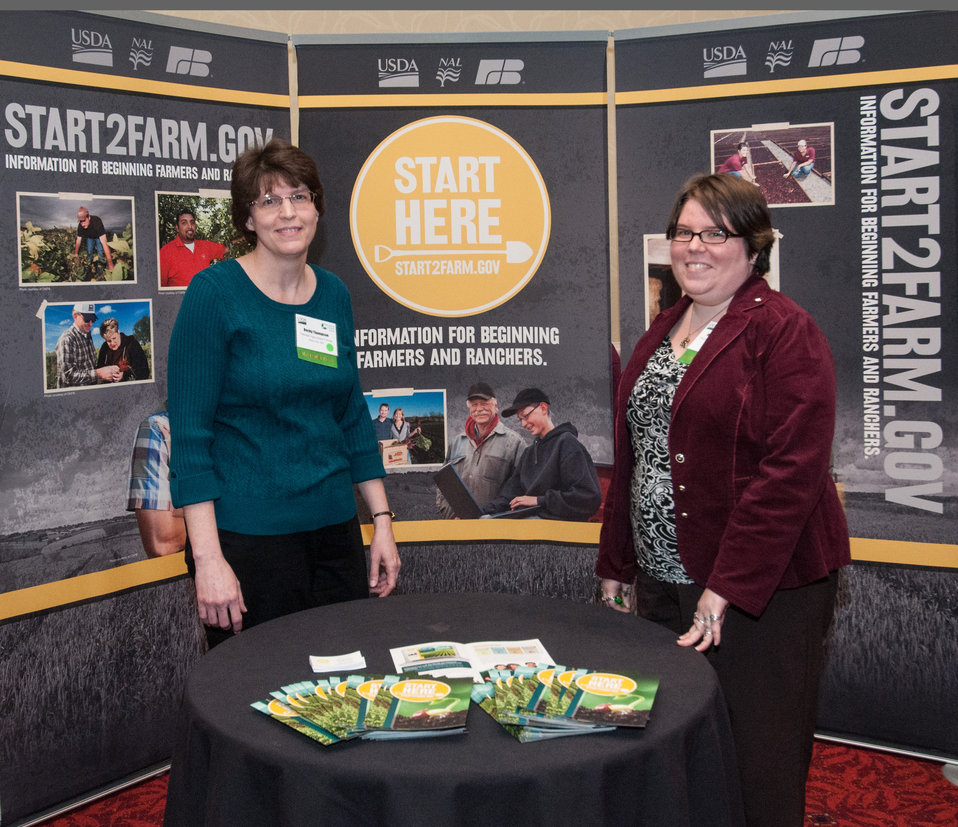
U.S. Department of Agriculture (USDA) National Agricultural Library's (NAL) Becky Thompson and Mariette Largess providing information to participants of the 2013 Agricultural Outlook Forum, held at the Crystal Gateway Marriott Hotel, Arlington, Virginia on Thursday, Feb. 21, 2013. This annual Forum brings together producers, policymakers, and business, government, and industry leaders to meet, exchange ideas, and discuss timely agriculture issues.